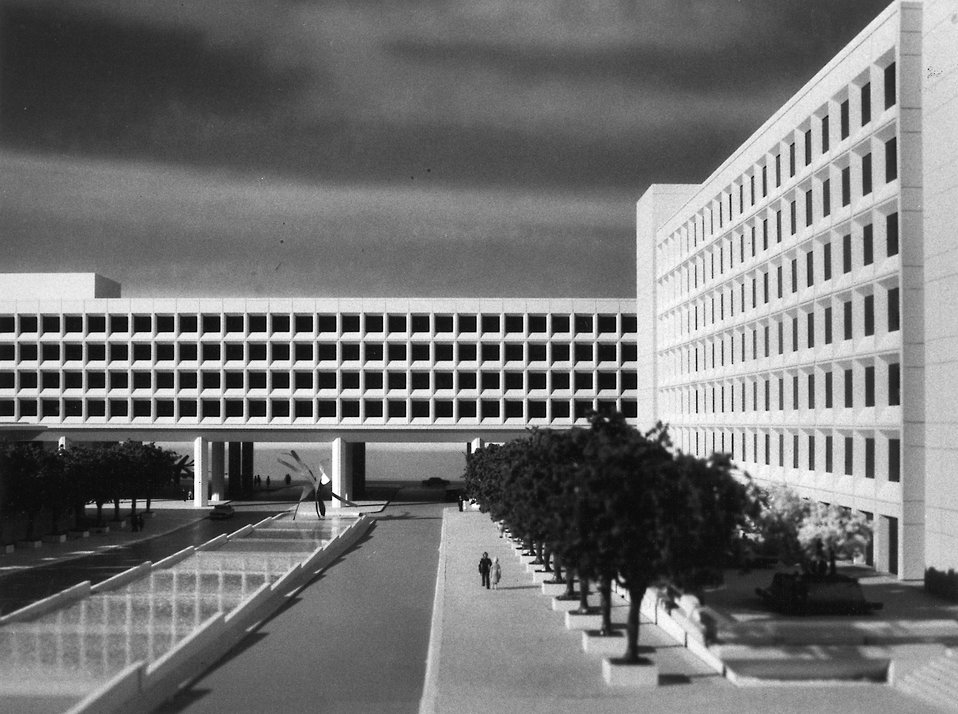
Federal Office building No. 5 Washington DC